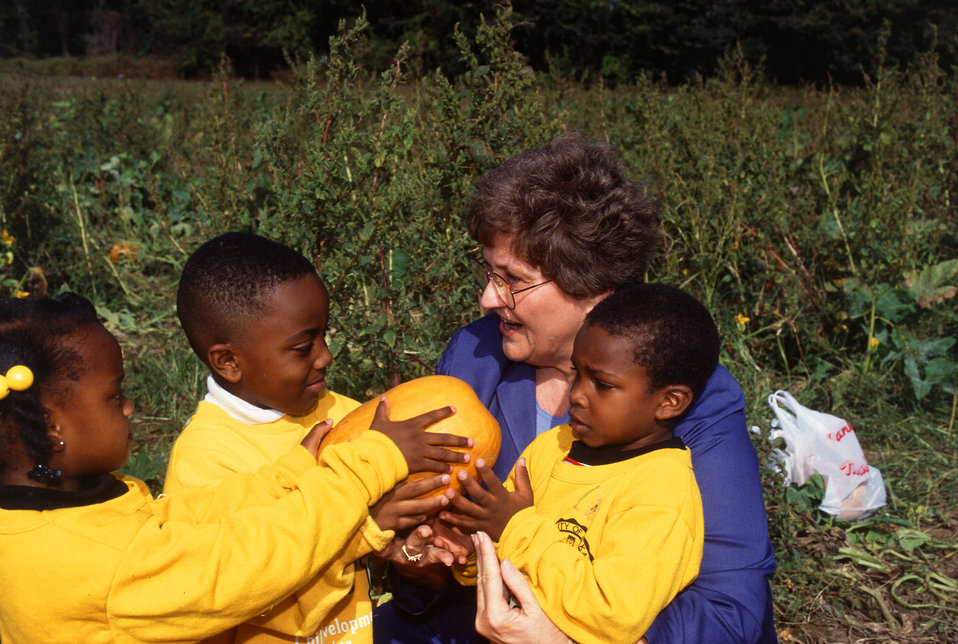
Delta Nutrition Intervention Research Initiative Nutritionist Director Margaret Bogle talks about the importance of eating fresh vegetables with students from the Child Development Center at the University of Arkansas at Pine Bluff on a farm in Grady, AR.